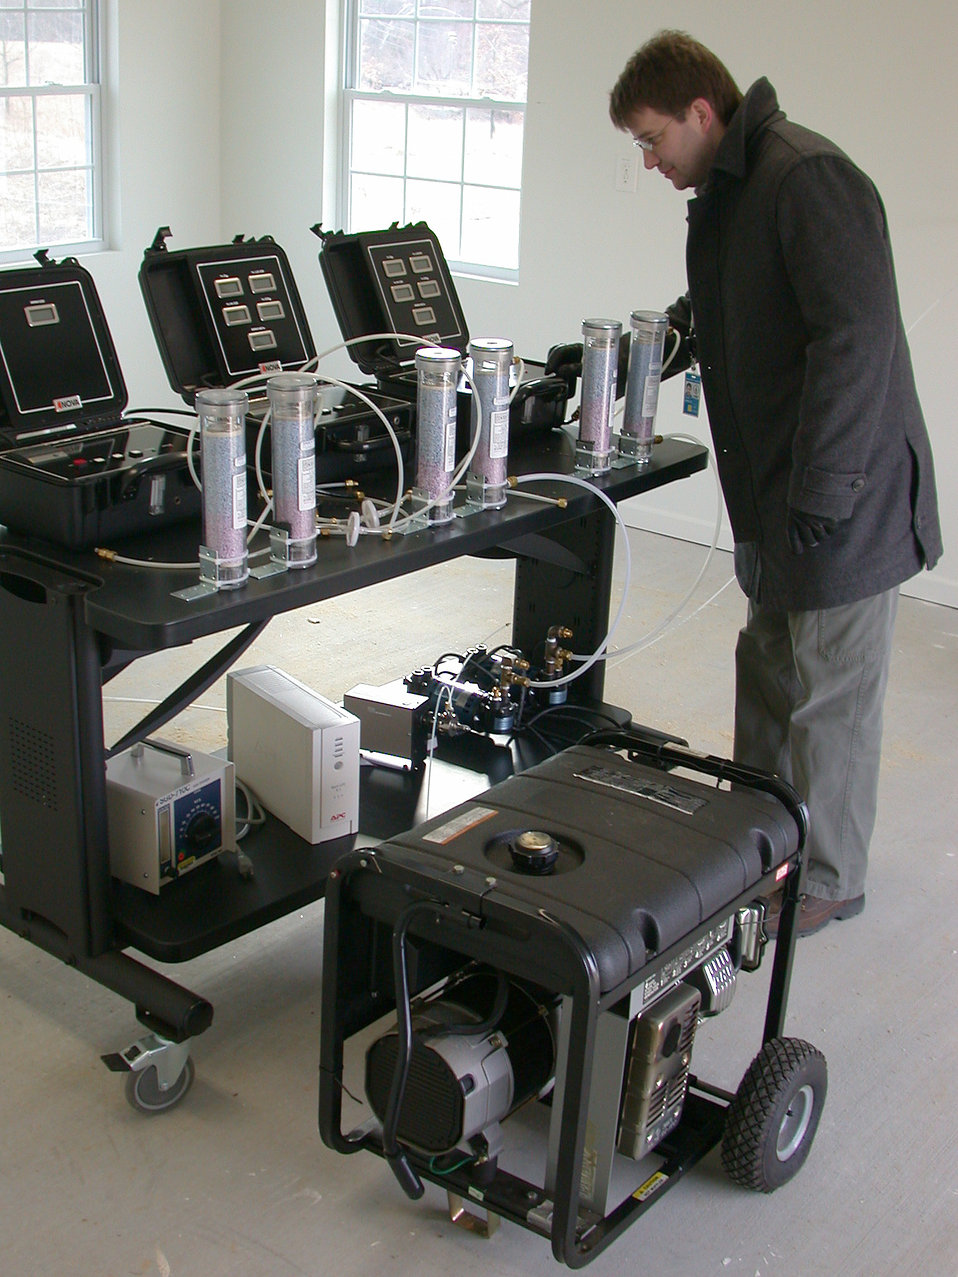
Gasoline-powered portable generators

NIST is working with the Consumer Product Safety Commission (CPSC) to quantify the dangers of improperly used gasoline-powered portable generators and to evaluate possible technical solutions to the problem. Here NIST researcher Steven Emmerich adjusts a multi-gas analyzer which will measure carbon monoxide, oxygen, carbon dioxide and hydrocarbons concentrations produced by such a generator located, against safety advice, in a garage.